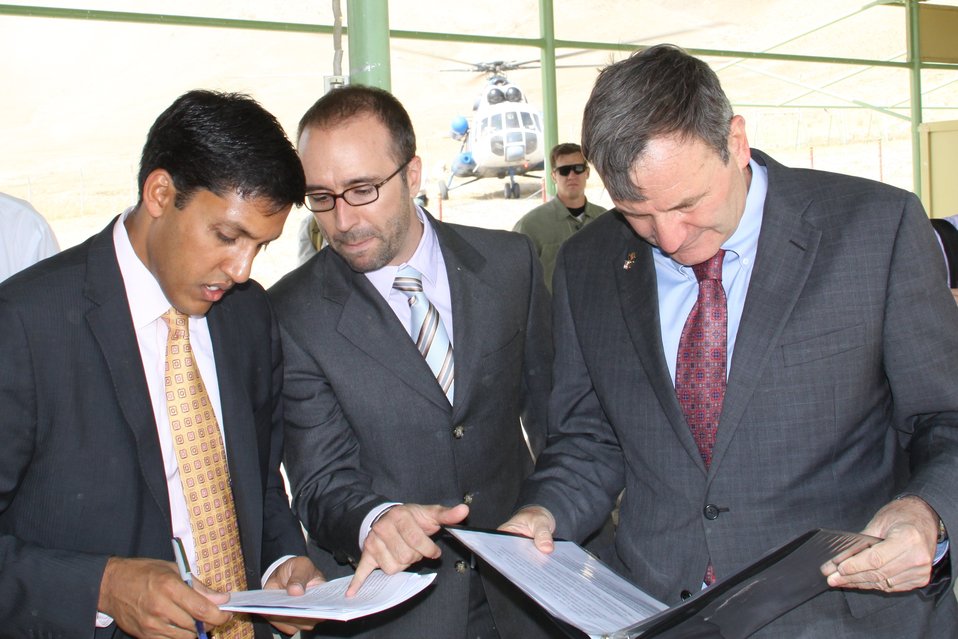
Badam Bagh Farm